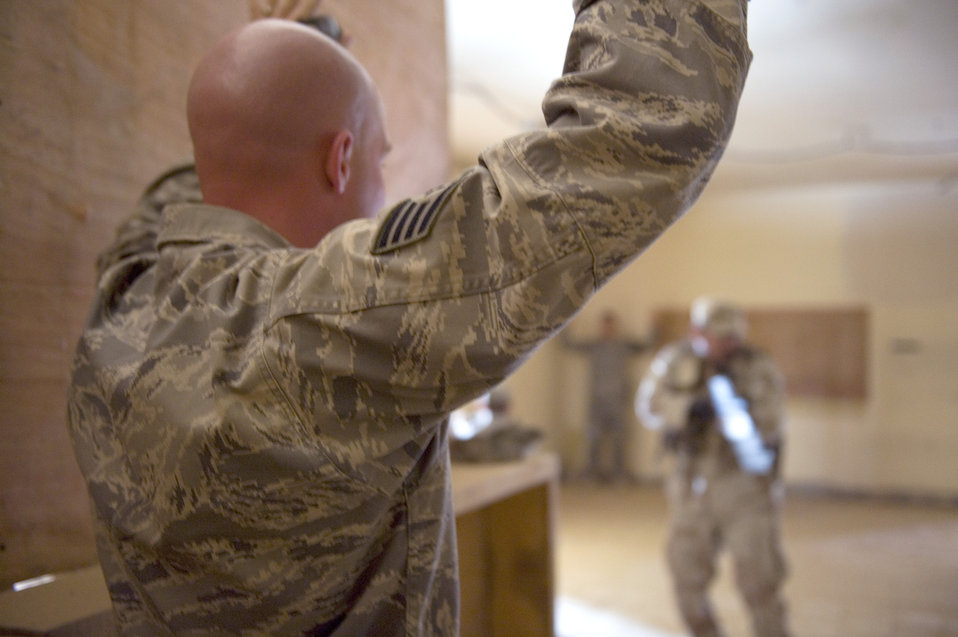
Sather Airmen take Iraqi security training to next level

A 447th Expeditionary Security Forces Squadron member pretends to be a hostage during urban combat training with Iraqi security forces members May 23, 2011, at Sather Air Base, Iraq. The Iraqi service members were undergoing advanced security forces training to prepare for personal security detail training.